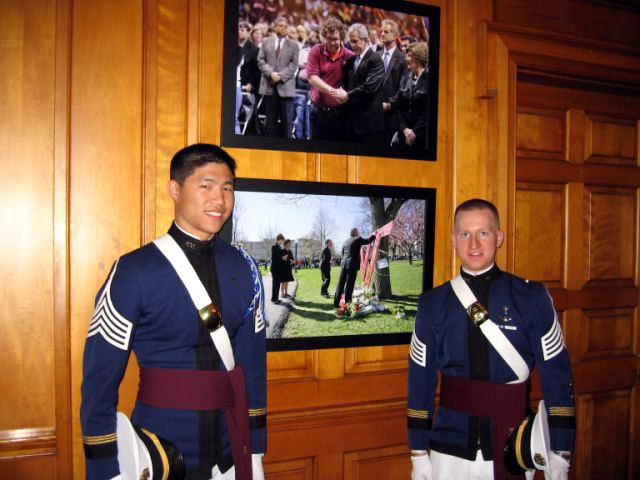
Virginia Tech cadets participate in National Day of Prayer

Virginia Tech Cadets Houston Yu and James Compton the stand with two photos taken during the president's April 17 visit to Virginia Tech May 3 at the White House in Washington, D.C. The photos are prominently displayed at the East Wing entrance. Cadet Yu, the regimental chaplain, and Cadet Compton, the chaplain for the highty-tighties, were invited guests of the National Day of Prayer. The cadets are members of the Virginia Tech Air Force ROTC.